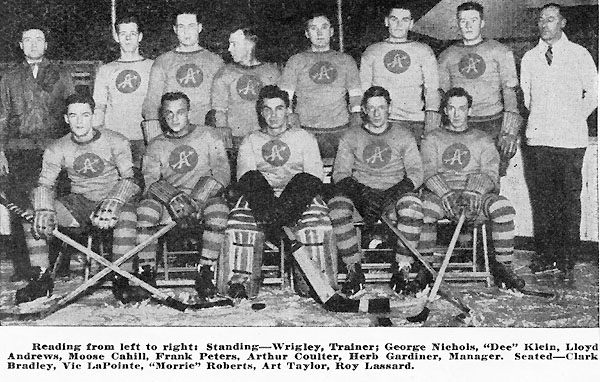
1929-30 Philadelphia Arrows (C-AHL)